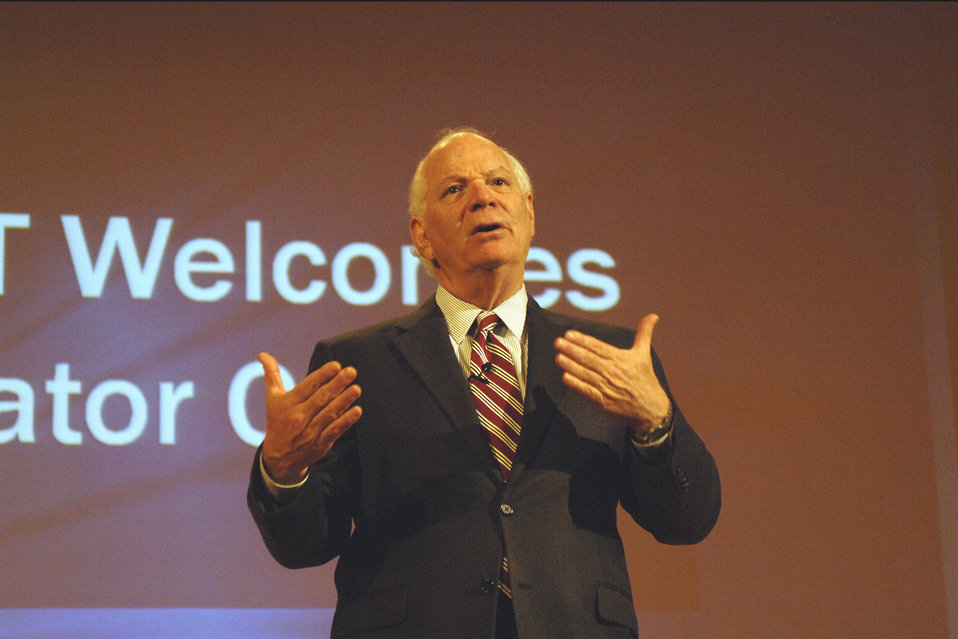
Senator Cardin

Sen. Ben Cardin was at the National Institute of Standards and Technology (NIST) in Gaithersburg, Md., today for a town hall with NIST employees. Cardin thanked the federal workers for their service and answered their questions on the federal budget, innovation, and science, technology, engineering and mathematics education.